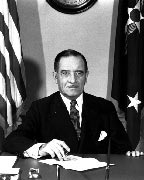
Harold E. Talbott became the third secretary of the Air Force on Feb. 4, 1953.